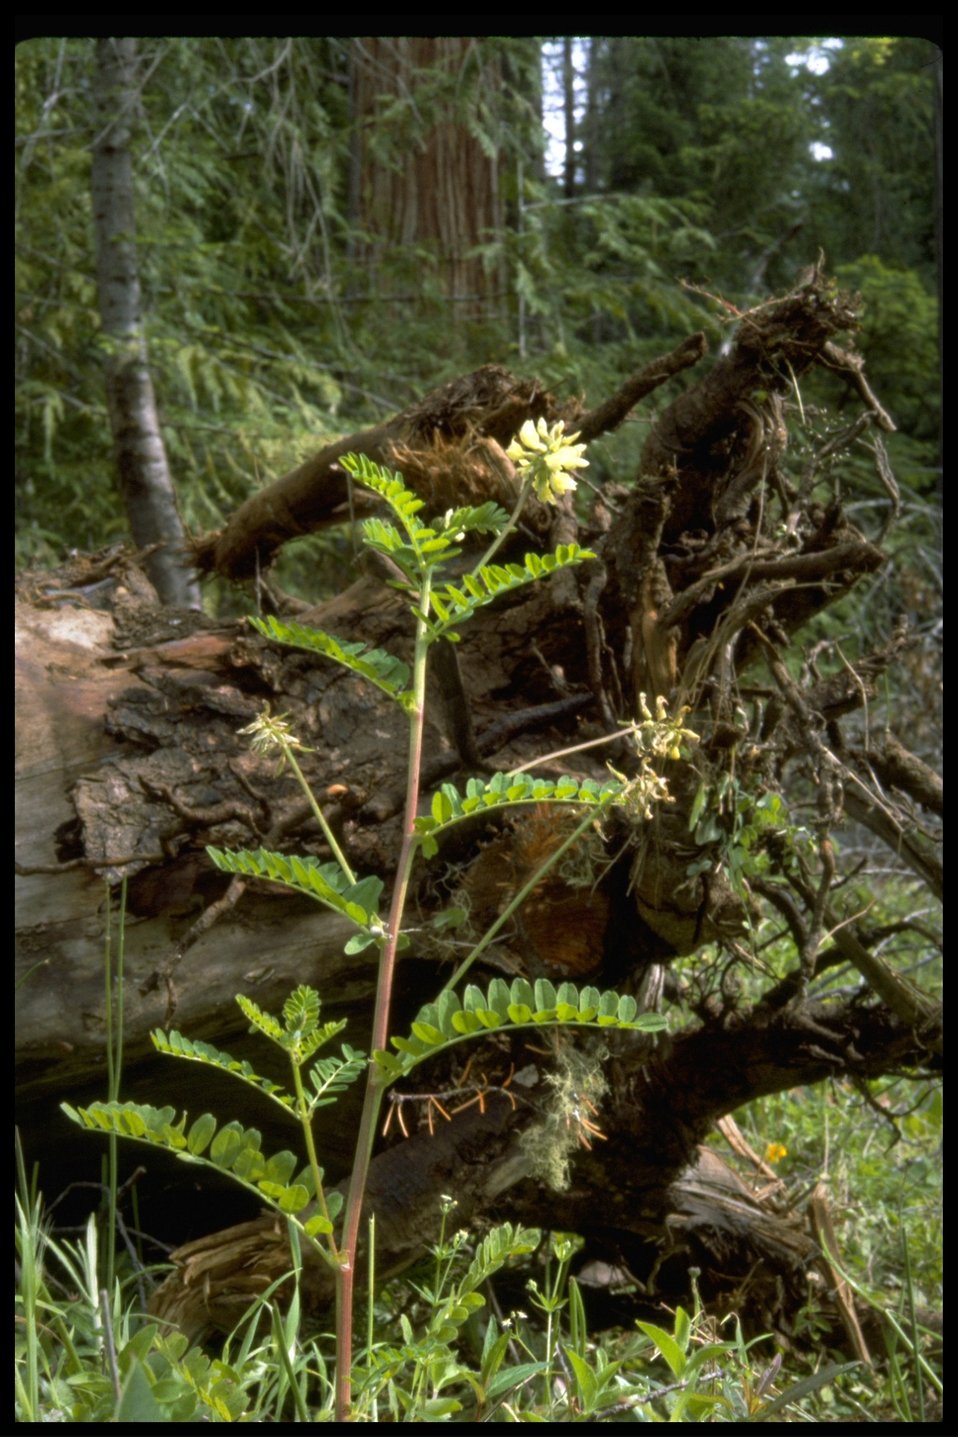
Astragalus umbraticus, commonly known as the Woodland Milkvetch.